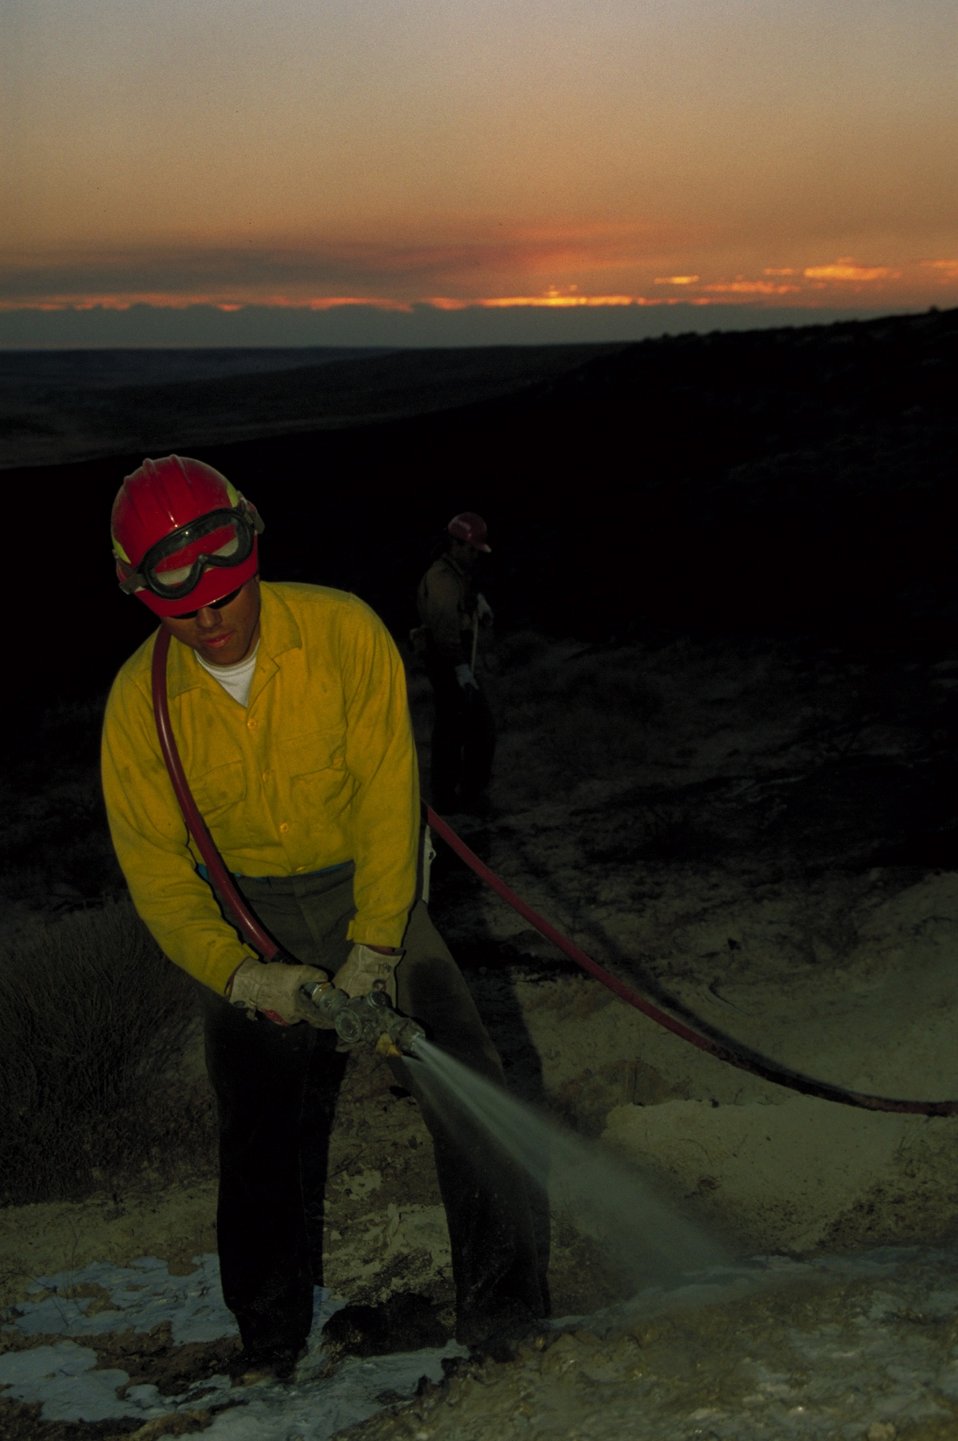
Prescribed burn Fire Season 2000 Lower Snake River District LSRD